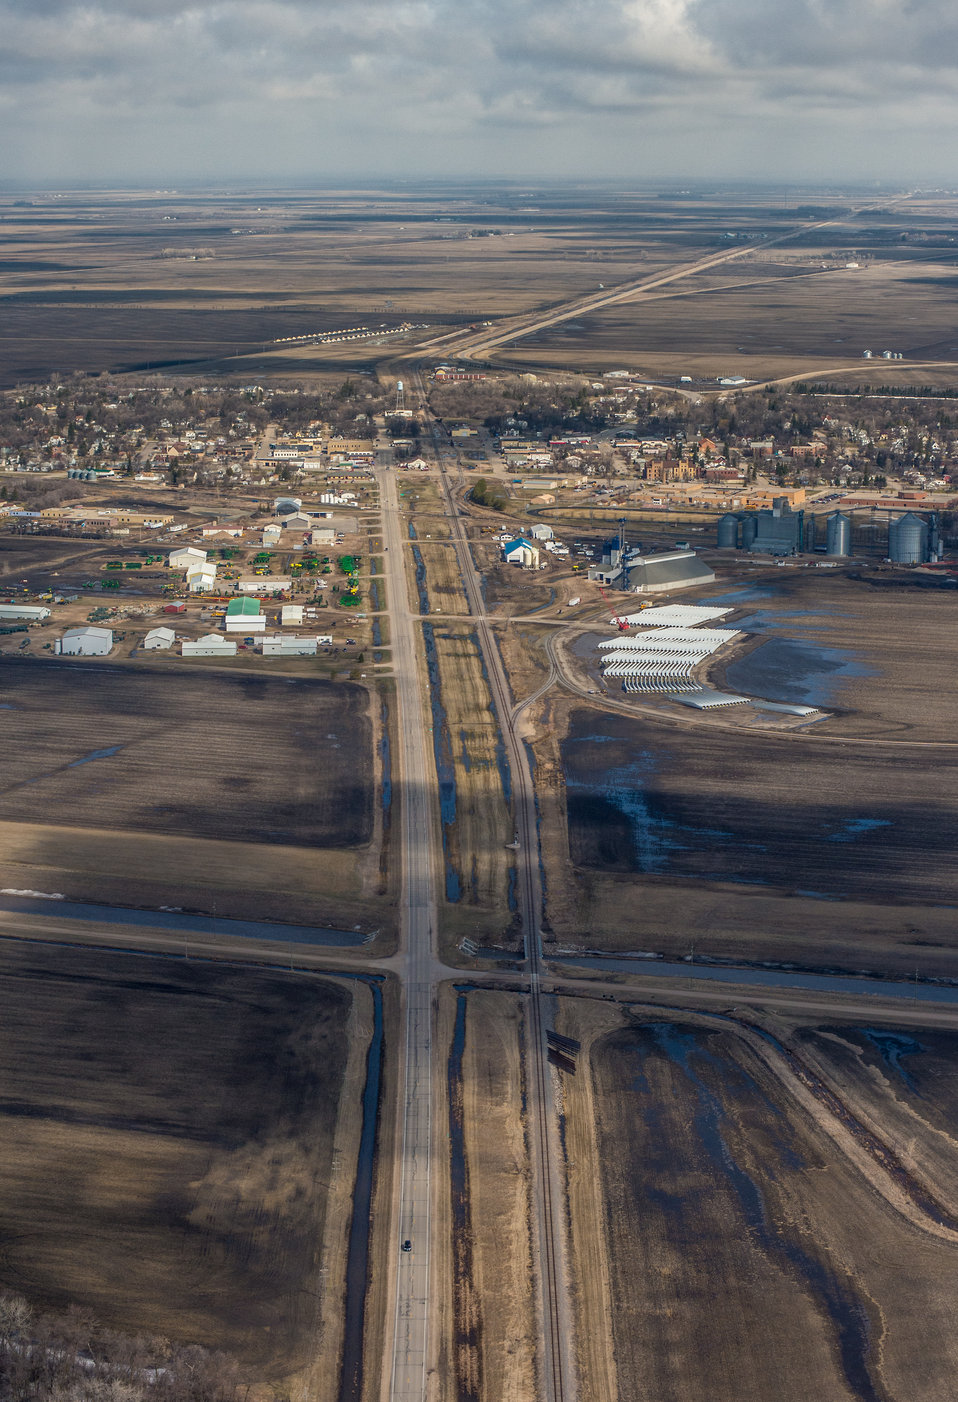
Snake River Diversion, a Public Law PL83-566 Small Watershed Program, at Warren, MN, on Wednesday, May 1, 2013. For information about this and other programs from the USDA Red River Basin Initiative (RRBI) please see www.mn.nrcs.usda.gov/news/features13/RRBI.html.